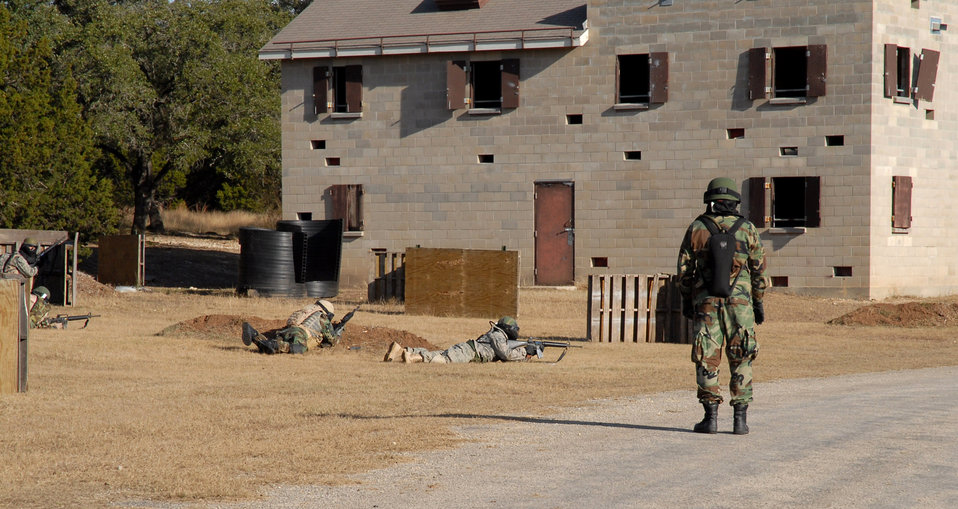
Battlefield training makes warriors out of Airmen

Students attending the Common Battlefield Airman Training Bridge course react to enemy fire as part of the final field training exercise Dec. 20 at Camp Bullis, Texas. Students use skills taught throughout the week to successfully maneuver into a village.